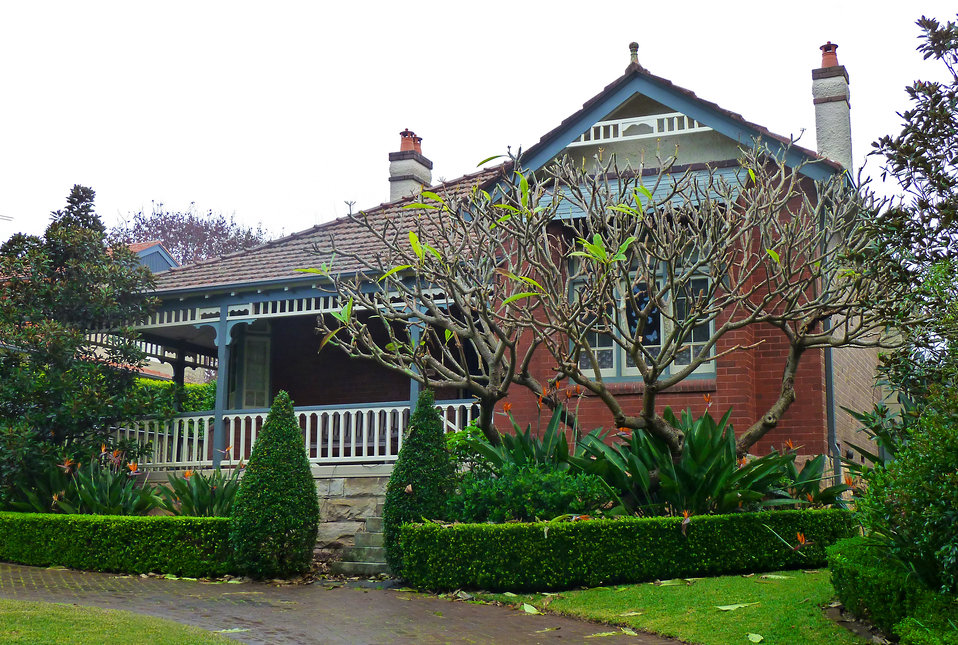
12 Gerald Avenue, Roseville, New South Wales, Australia.